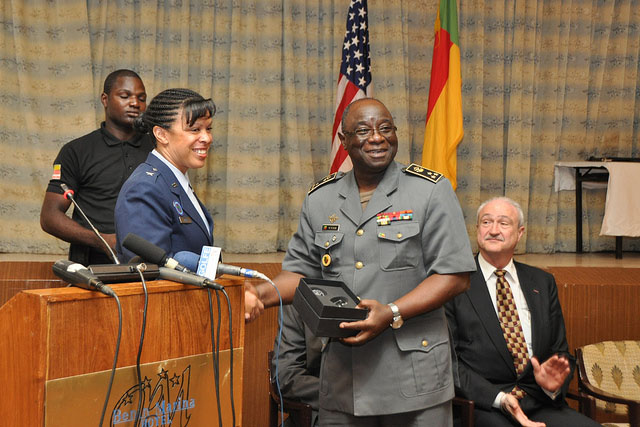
Brig. Gen. Stayce Harris, the Air Force's highest ranking African-American female aviator